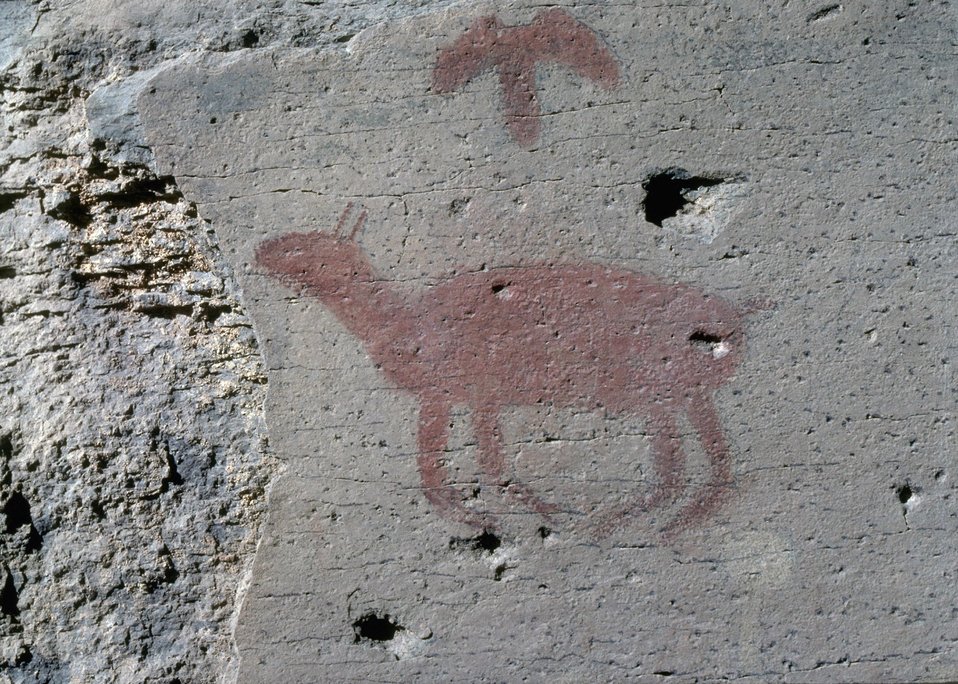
Cow elk and Falcon pictographs near Burns, Oregon.